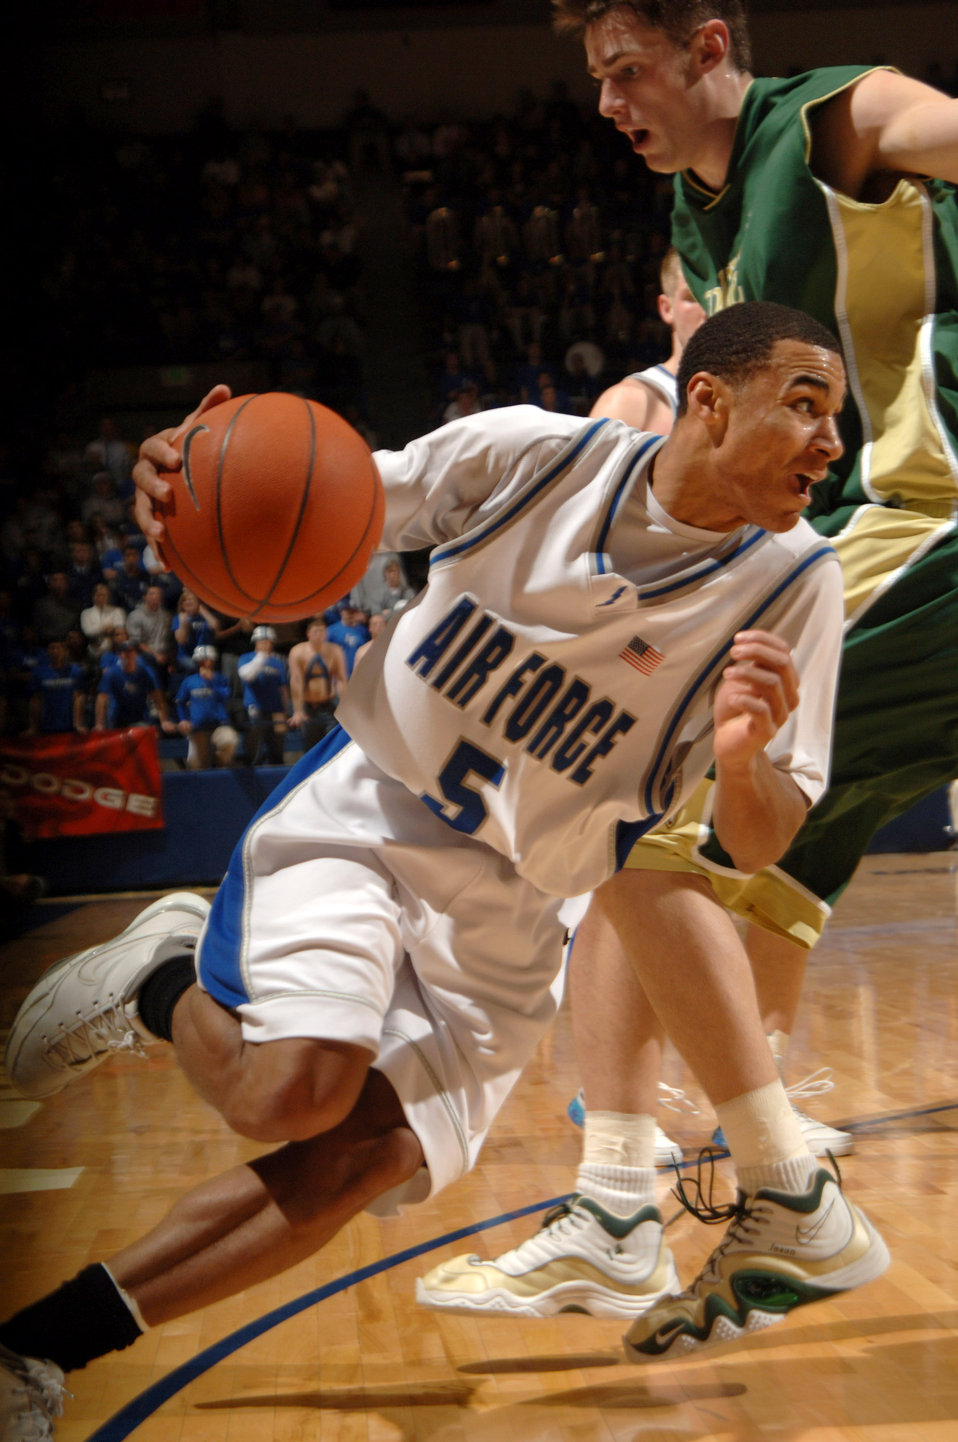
Academy cadet has hoop dreams

Air Force Academy senior guard Matt McCraw drives past a Colorado State University defender Feb. 17 during a game in Clune Arena on Academy grounds. McCraw was named to the Mountain West Conference All-Conference team Monday by league coaches and media.